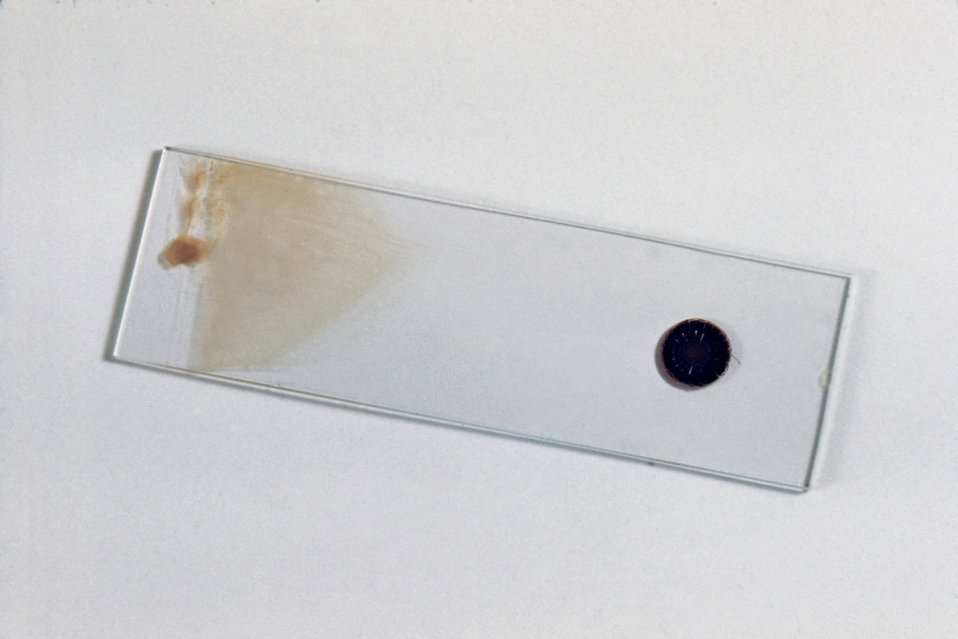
In this slide preparation the thick film is too thick, and the thin film is too thin.